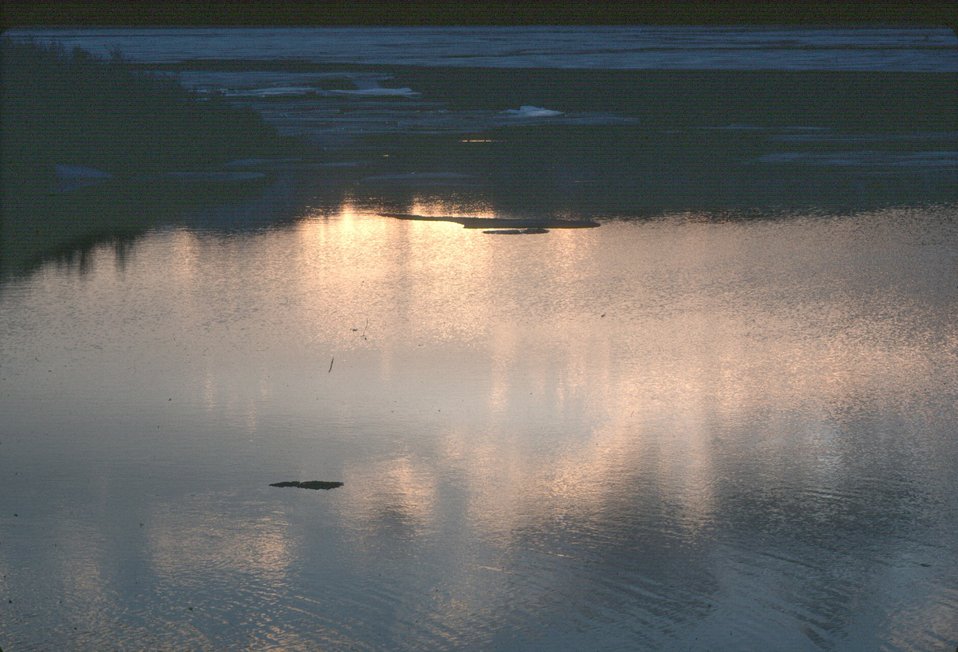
Sunset at Tangle Lakes, Denali Highway, Alaska